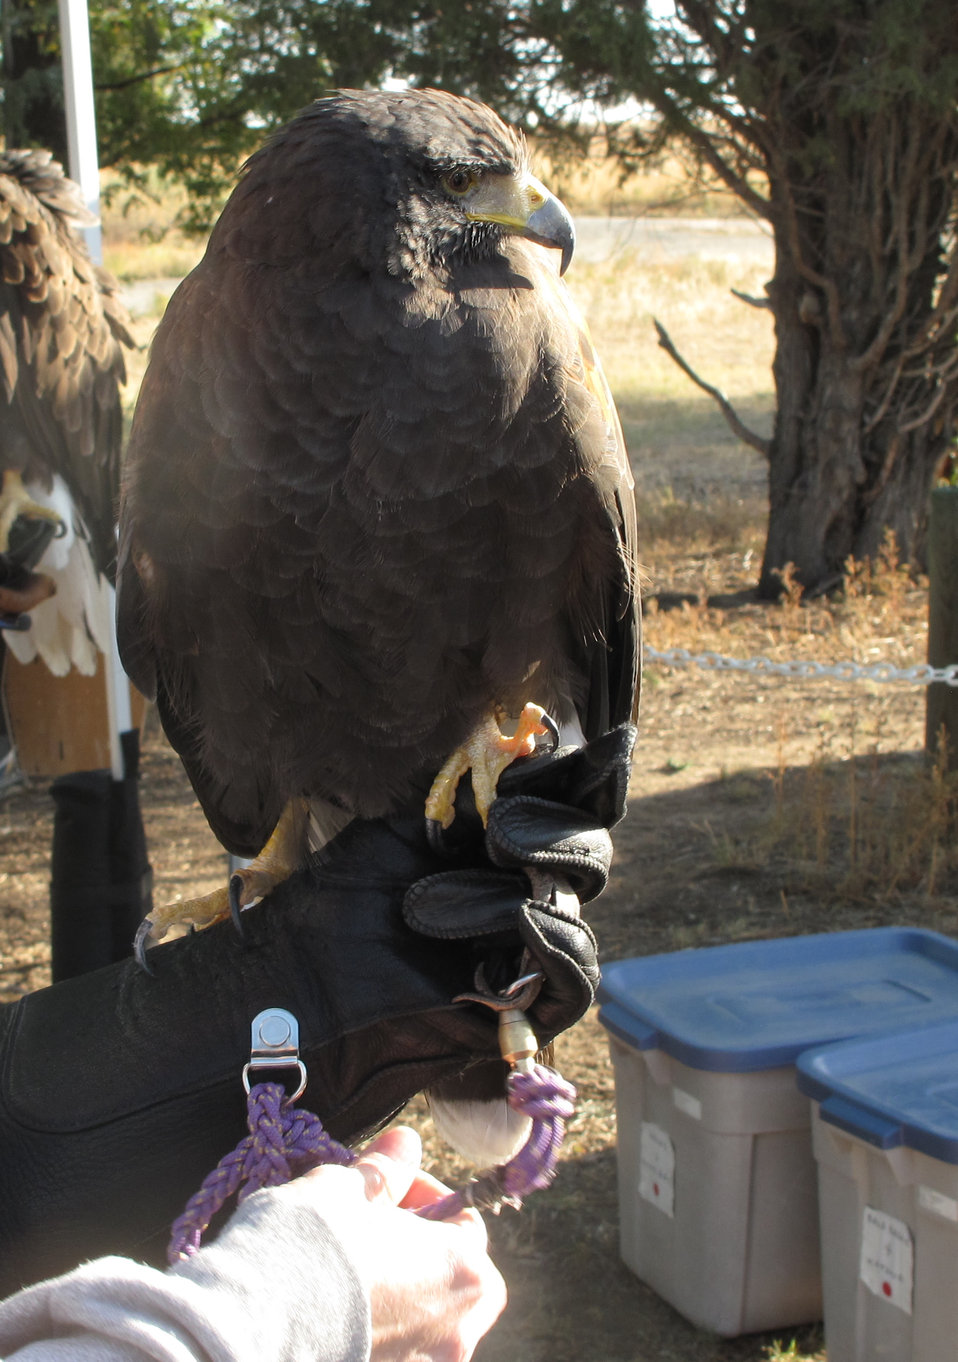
Refuge Round-Up 2010